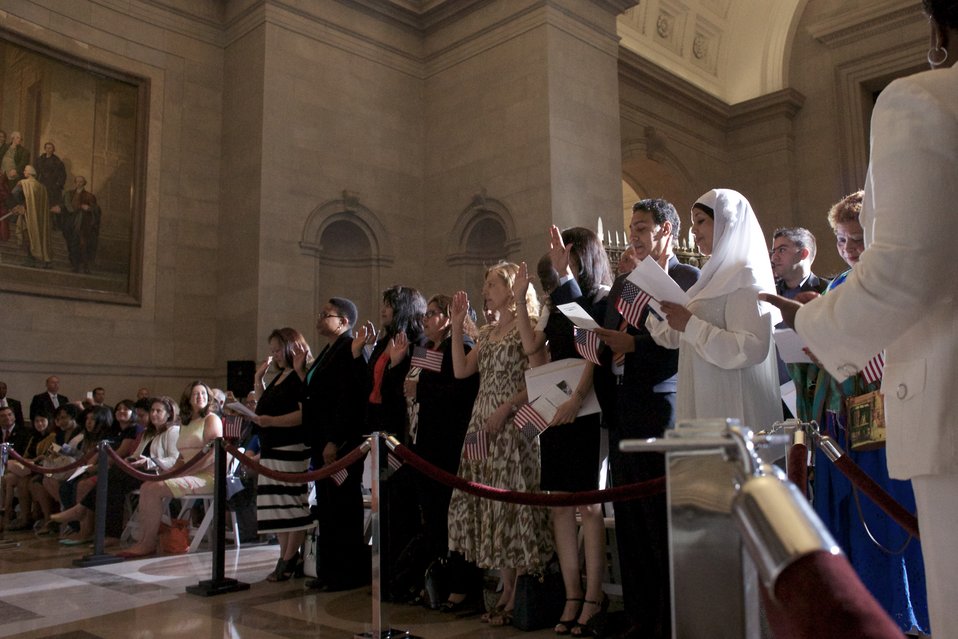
Naturalization Ceremony with Michelle Obama